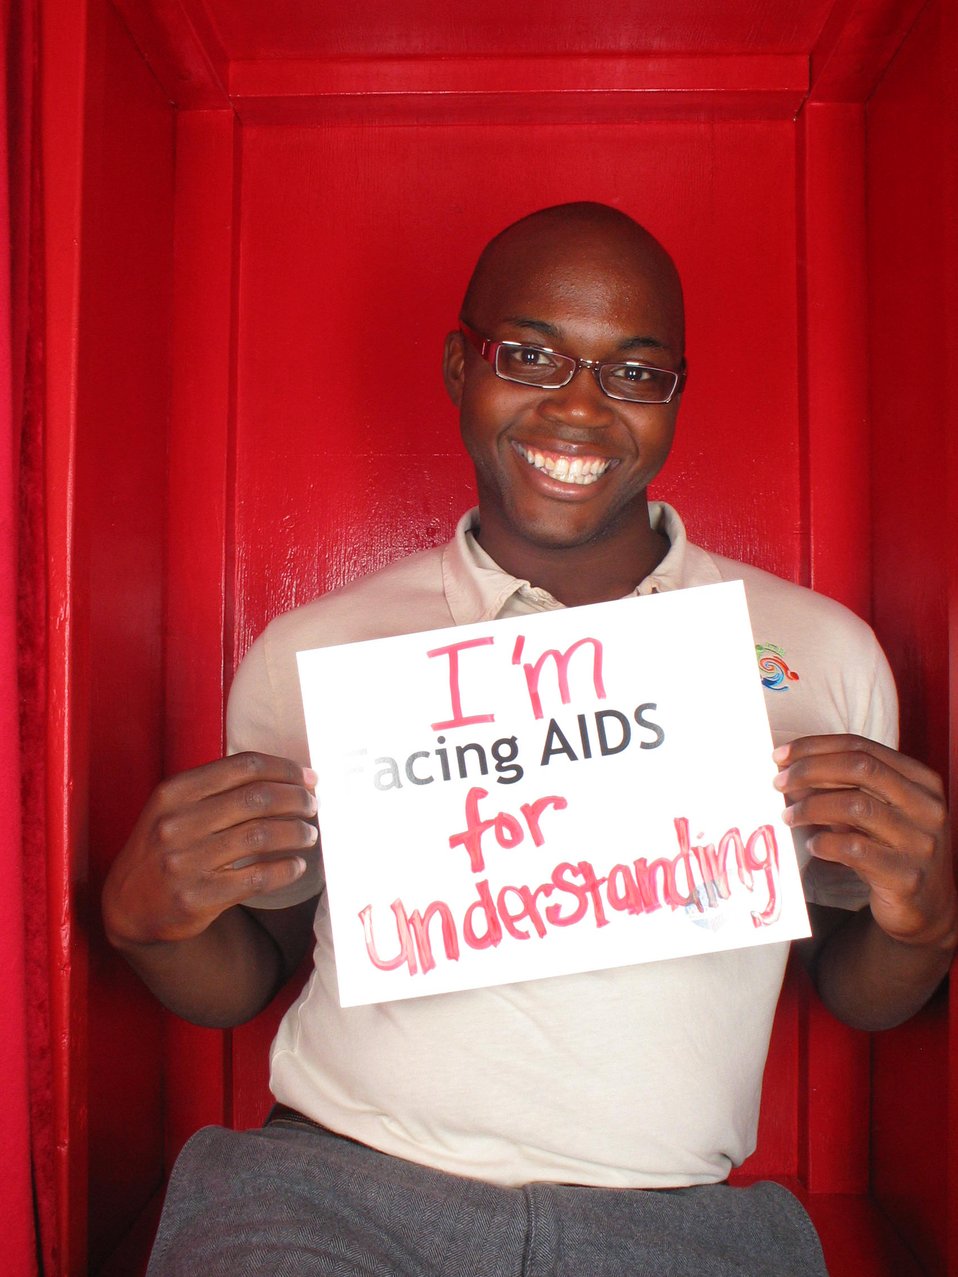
I'm Facing AIDS for understanding